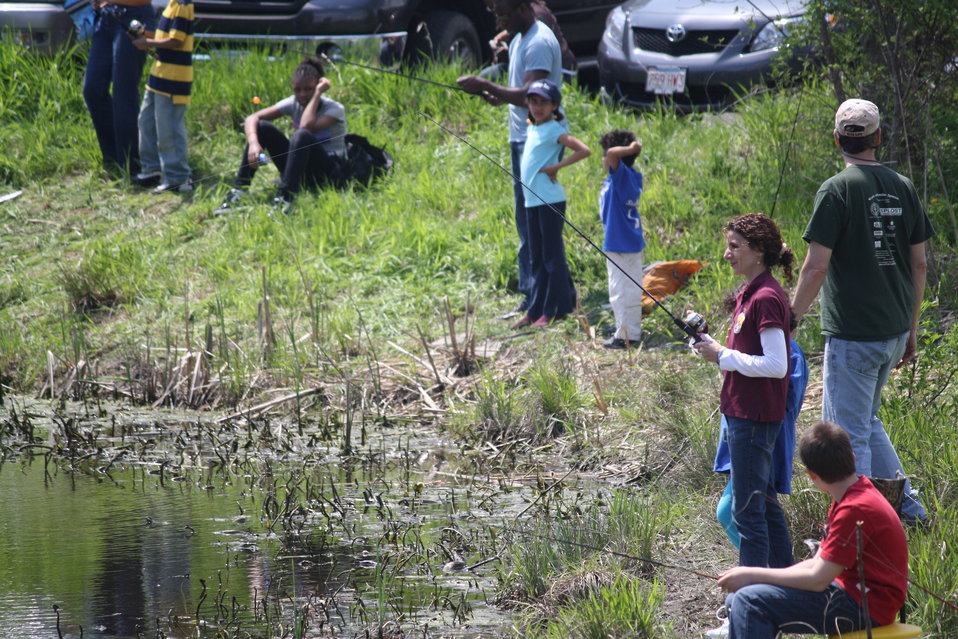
Fishing

USFWS fishing derby in Hadley, MA on May 7th.